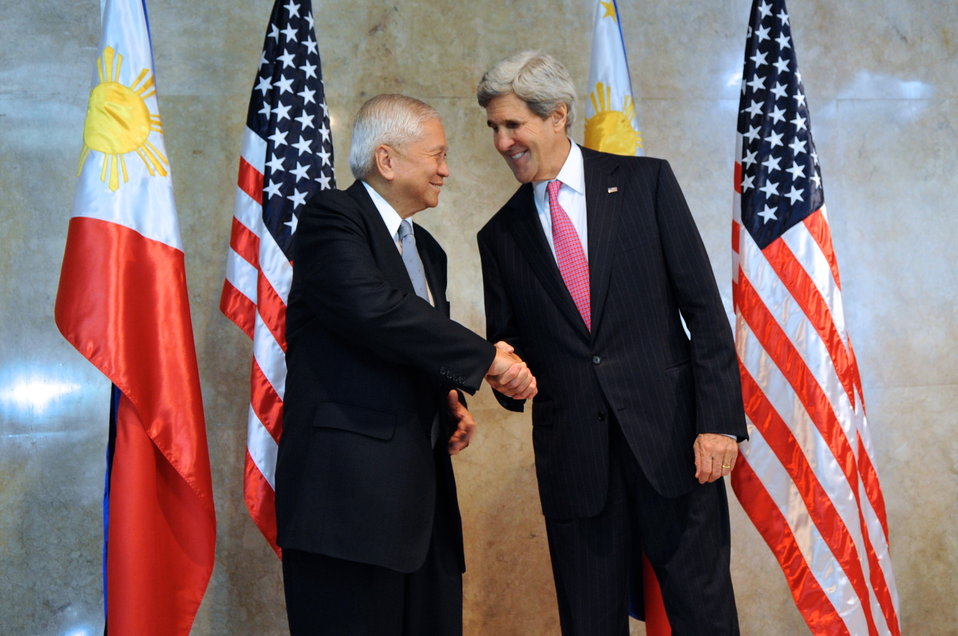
Philippine Foreign Secretary Del Rosario Welcomes Secretary Kerry to Manila

Foreign Secretary Albert del Rosario of the Philippines welcomes U.S. Secretary of State John Kerry to his office in Manila before a bilateral meeting on December 17, 2013.